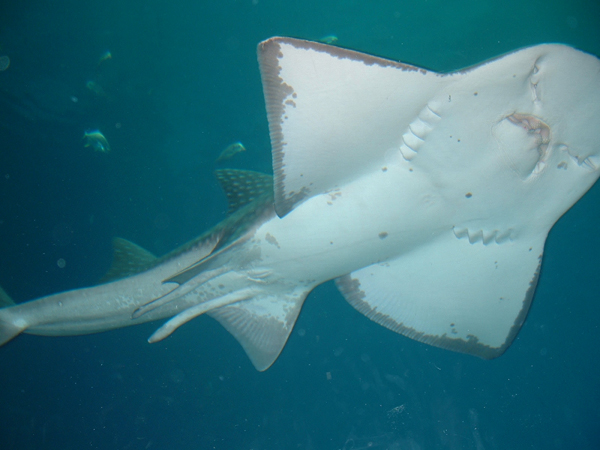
Photo by Angela Grider. A Bowmouth guitarfish overhead at the Georgia Aquarium.